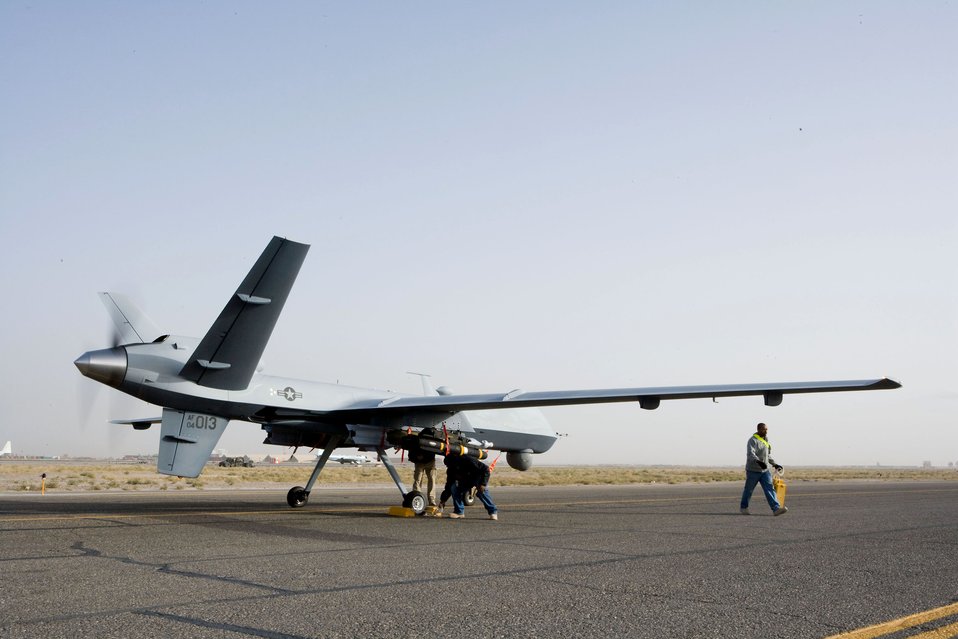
Air Force's hunter-killer UAV now flying in Afghanistan

Aircrews perform a preflight check on an MQ-9 Reaper before it takes off on a mission in Afghanistan Oct. 1. The Reaper is larger and more heavily-armed than the MQ-1 Predator and attacks time-sensitive targets with persistence and precision, to destroy or disable those targets.